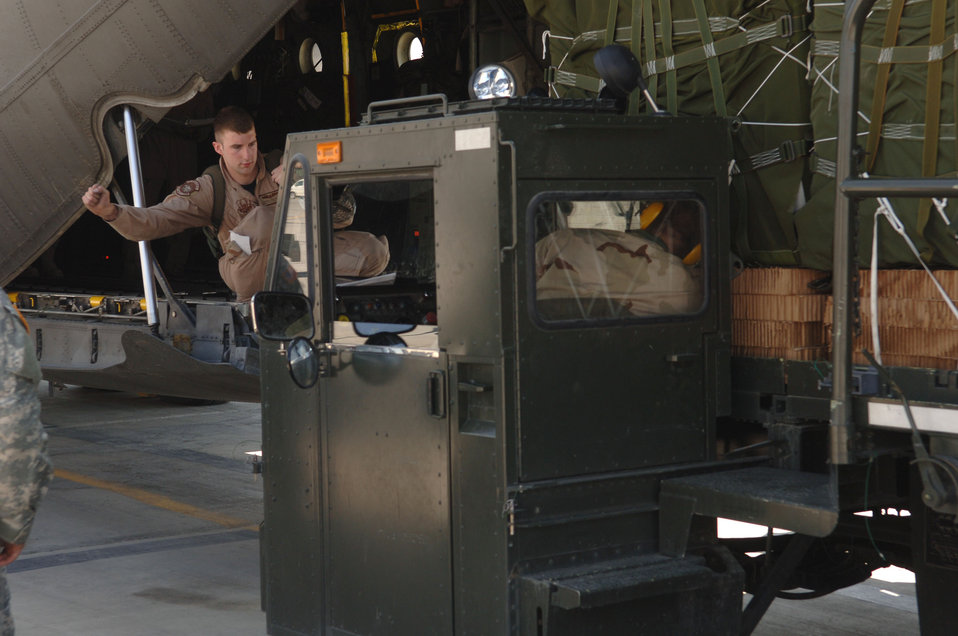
C-130s support coalition operations

Senior Airman Travis Robotkay signals the driver of a cargo loader to stop during loading operations at Bagram Air Base, Afghanistan, on Saturday, April 15, 2006. Airman Robotkay is a loadmaster with the 774th Expeditionary Airlift Squadron and is deployed from Kulis Air National Guard Base, Alaska.